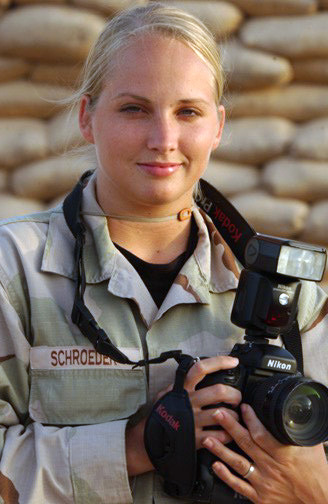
Schroeder

OPERATION IRAQI FREEDOM -- Senior Airman Tia Schroeder, a still photographer deployed with the 405th Expeditionary Communications Squadron, is a veteran participant of